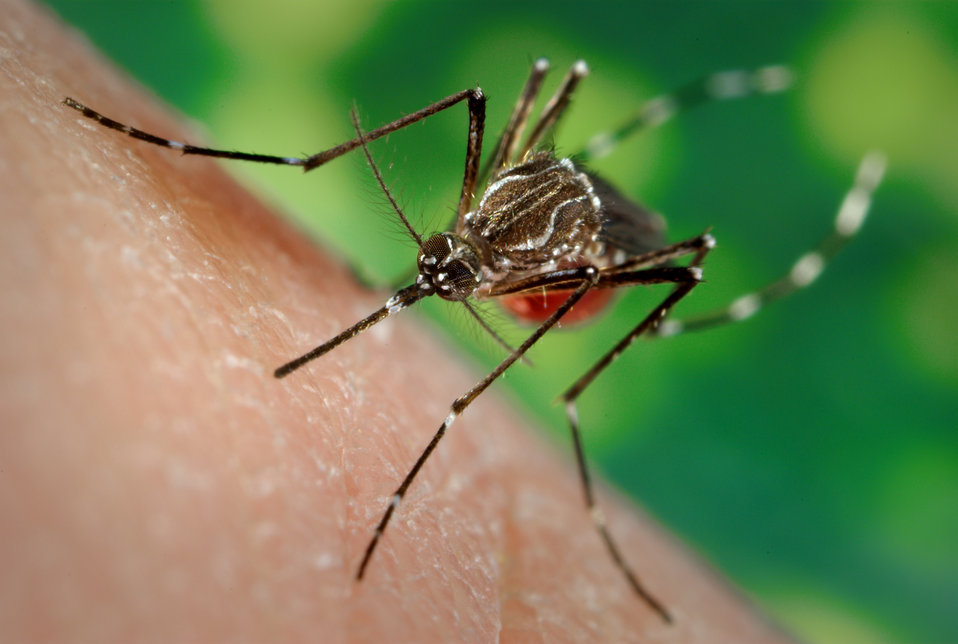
This Aedes aegypti female was from a strain of mosquitoes named LVP-IB12, an acronym representing the fact that these mosquitoes were derived from the Liverpool strain (LVP), and that they were inbred 12 times (IB12), in order to create a more homogeneous genotype. Also, of great importance is the additional fact that this specie is being used in the A. aegypti genome sequencing project. Though the mosquito's geographical origin is not known, it is believed to be somewhere in Africa.